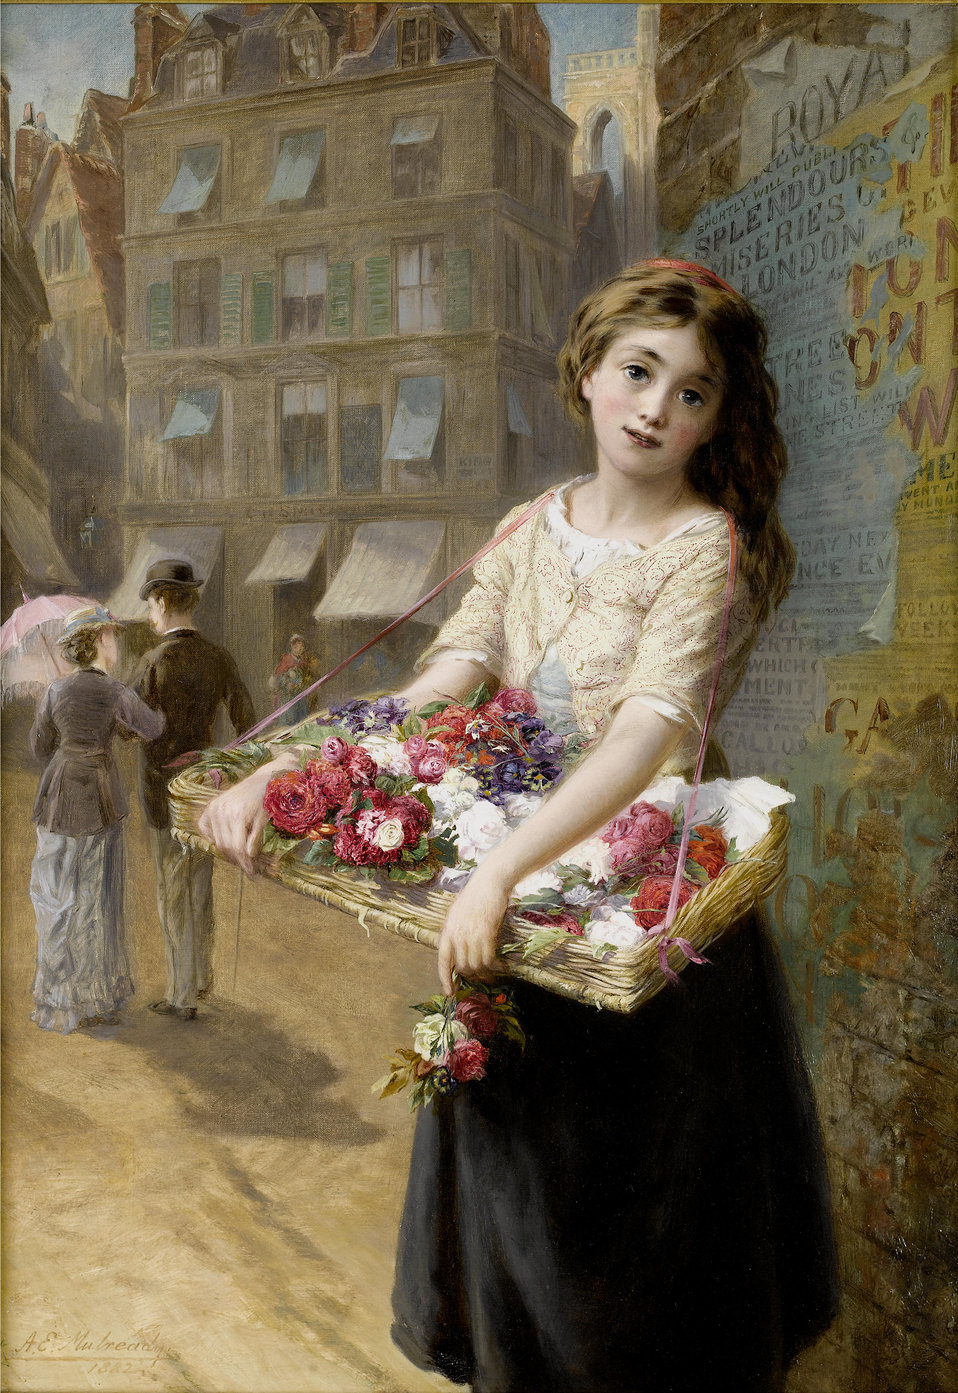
Augustus Edwin Mulready A street flower seller 1882